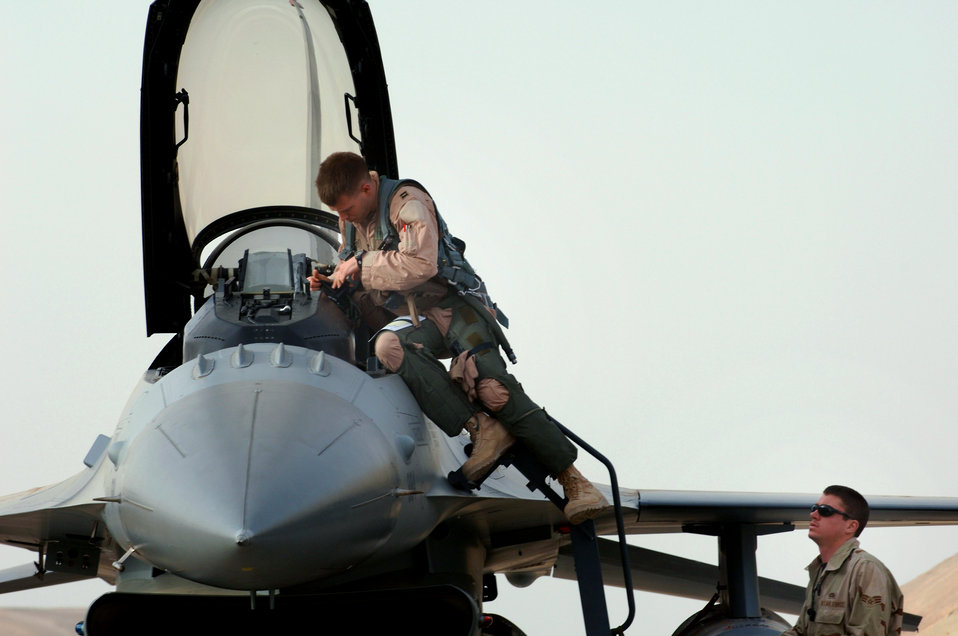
Buckle up

Capt. William Lutmer climbs into an F-16 Fighting Falcon while Senior Airman Skylar Mims assists him Jan. 29 at Balad Air Base, Iraq. Captain Lutmer is deployed to the 332nd Air Expeditionary Wing as part of the 14th Expeditionary Fighter Squadron. Airman Mims is a crew chief for the 14th Expeditionary Aircraft Maintenance Squadron. The 14th Fighter Squadron is deployed from Misawa Air Base, Japan.